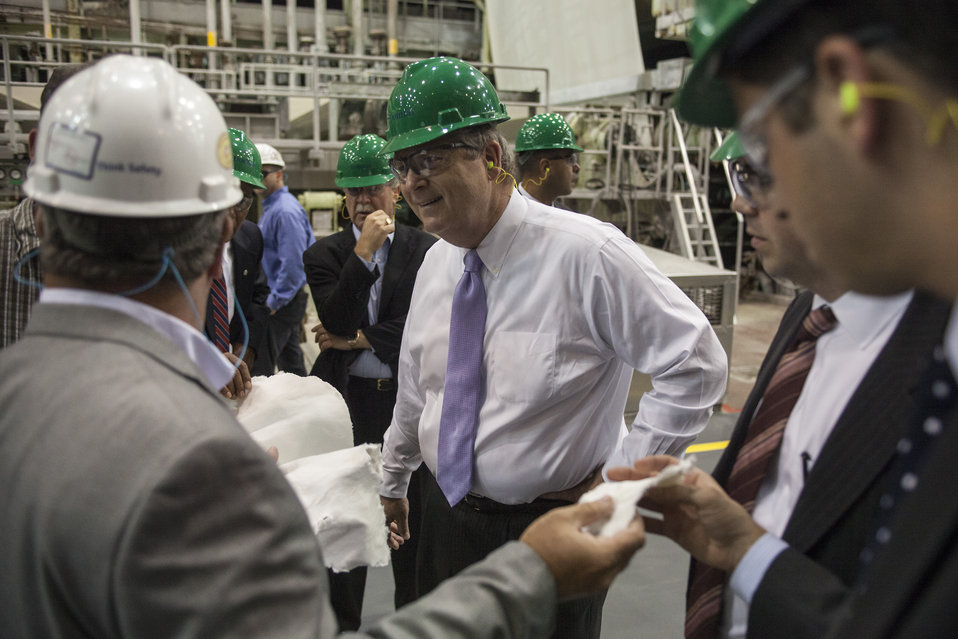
Agriculture Secretary Tom Vilsack (center) tours Domtar Inc. in Plymouth, NC on Friday, Aug. 15, 2013. Domtar produces lignin, a biobased material with the potential to create advanced new products and energy. Domtar is working with a number of partners, including the U.S. Forest Products Laboratory, on development of lignin applications that includes fuel additives, solid fuels, high performance adhesives and more. The U.S. Department of Agriculture (USDA) through a Biomass Research and Development Initiative funding s is the first of its type to open in the U.S. in more than 25 years.